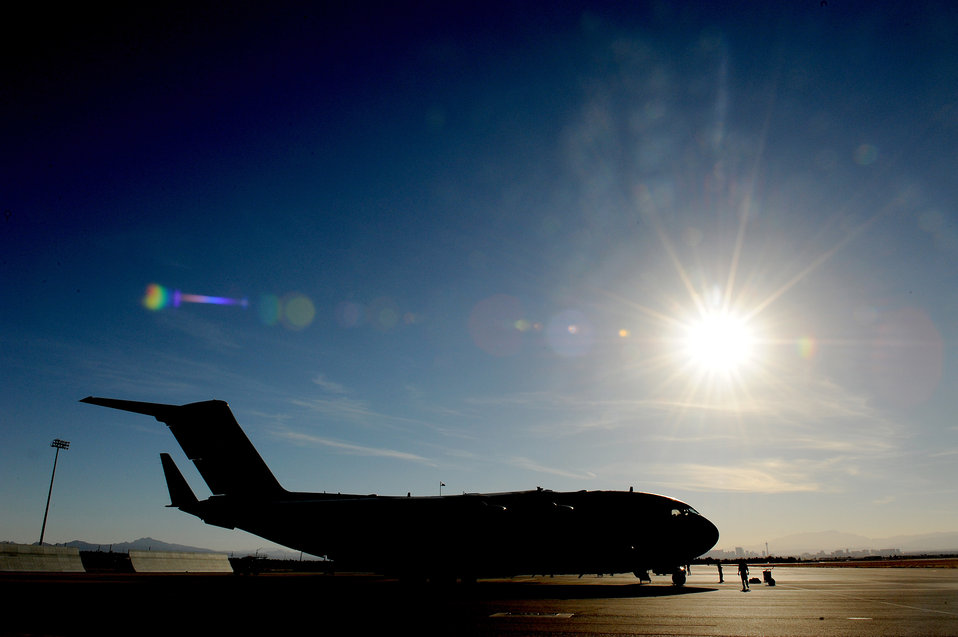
Aircrews provide training for weapons school

A 535th Airlift Squadron C-17 Globemaster III arrives at the conclusion of the Mobility Air Forces Exercise 10-B Nov. 18, 2010, at Nellis Air Force Base, Nev. Aircrews trained in unrestricted descent assault landings, air drop, combat offloads, air refueling, night vision goggle training, combat offloads, low levels, mountainous terrain, assault landings, threat responses and multiple ship formation training during a five-day training trip to Washington Nov. 12 to 17 leading up to the MAFEX.